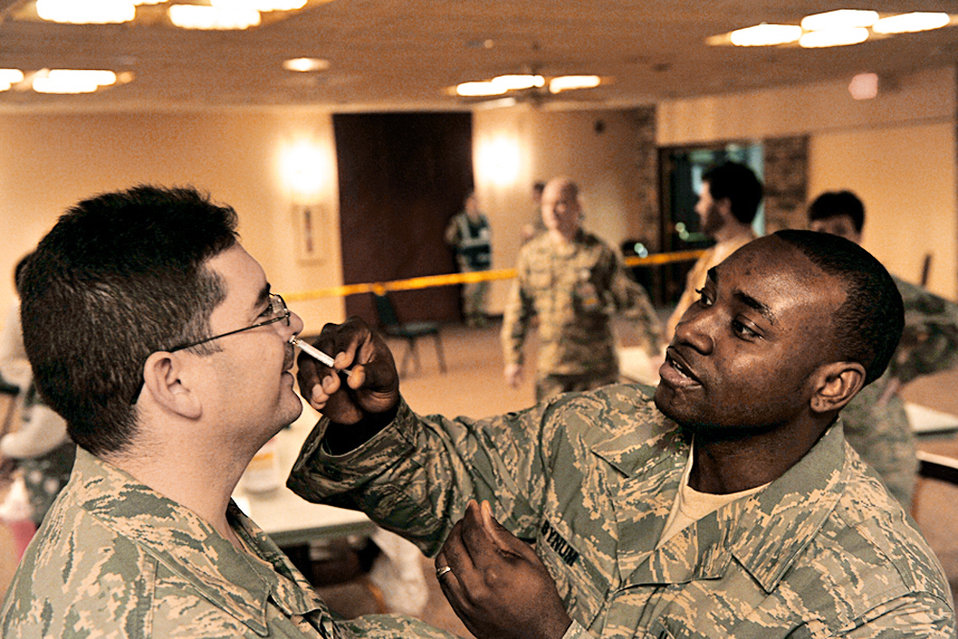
Vaccinate me sir

Master Sgt. Jesse Renteria receives the H1N1 flu mist inoculation from Staff Sgt. Vashon Bynum during a point of distribution exercise Jan. 21, 2010, at Offutt Air Force Base, Neb. Sergeant Renteria is assigned to the 55th Maintenance Operations Squadron and Sergeant Bynum is assigned to the 55th Medical Group.